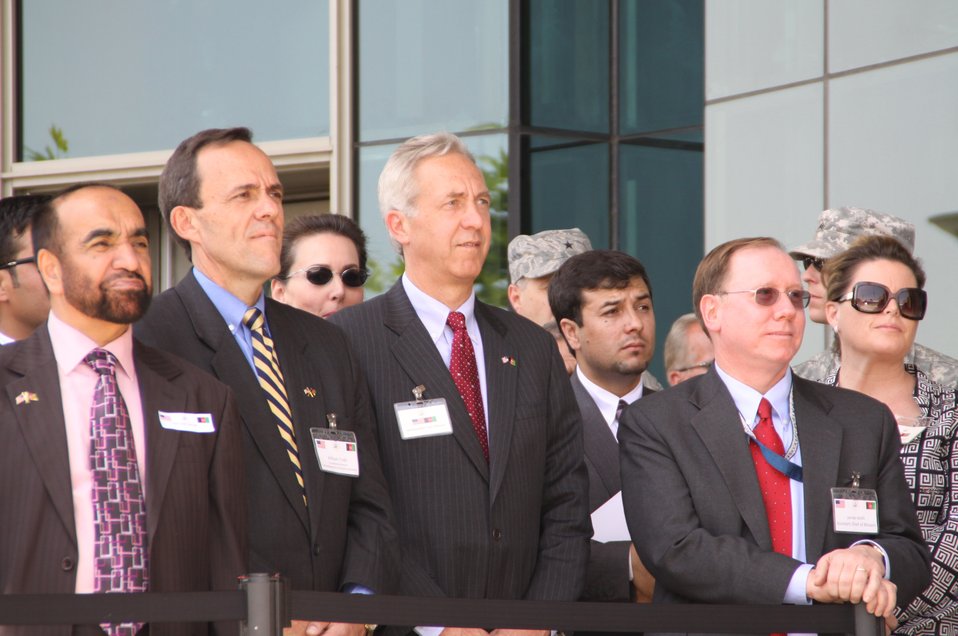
Kabul Official July 4th Celebration